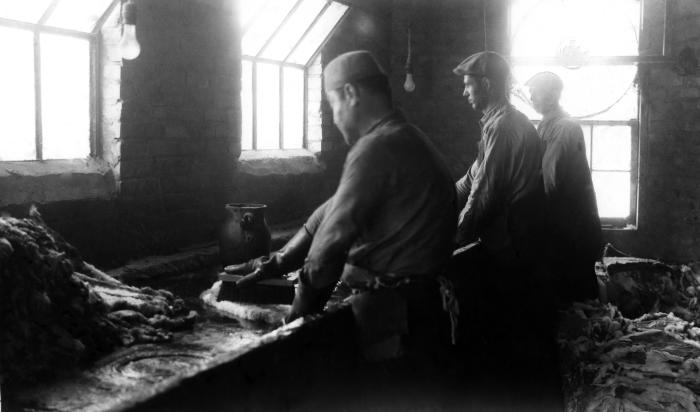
This historical image was provided by the Center for Disease Control's (CDC), National Institute for Occupational Safety and Health (NIOSH). Published in the 'Public Health Bulletin' No. 234, in an article entitled, "A Study of Chronic Mercurialism in the Hatters' Fur Cutting Industry", Figure 5, 1937, this image depicted three men in a Connecticut fur processing plant, as they were 'carroting' rabbit pelts. Carroting is the process of treating 'hatters'' fur with mercury nitrate, thereby, rendering the fur suitable for manufacturing hats. Note that the worker in the foreground was wearing gloves, however, from this image it cannot be determined whether or not the other two men were wearing gloves, which when working with animal skins, is now required. None of the workers were using filtered breathing masks, or eye protection.